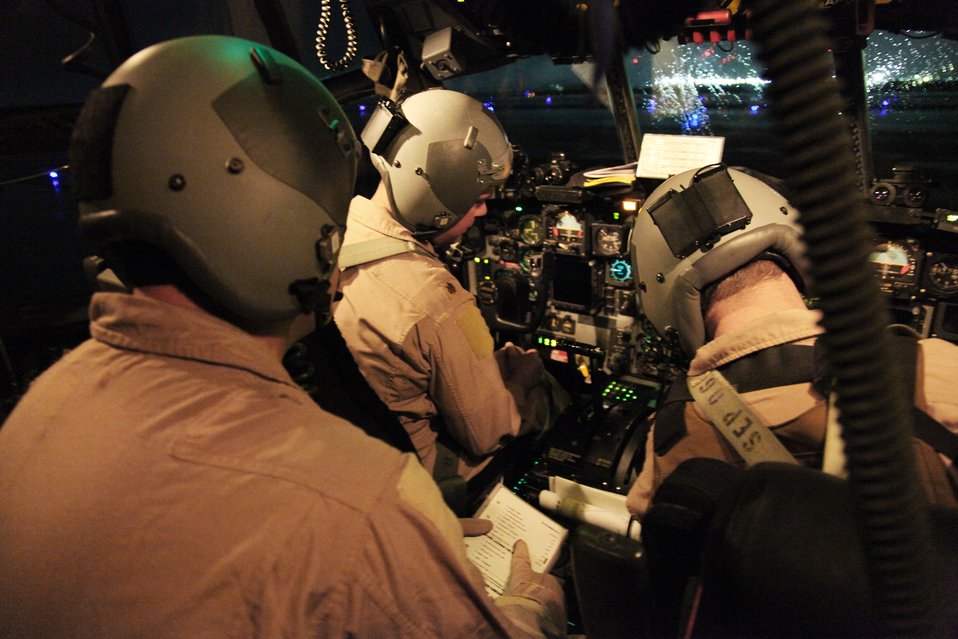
AC-130 crew provides air support

Pilots aboard an AC-130 Gunship conduct final systems checks prior to takeoff March 3, 2010, from Bagram Airfield, Afghanistan. The flight crew was providing close-air support for ground troops conducting operations in Afghanistan's Parwan province.